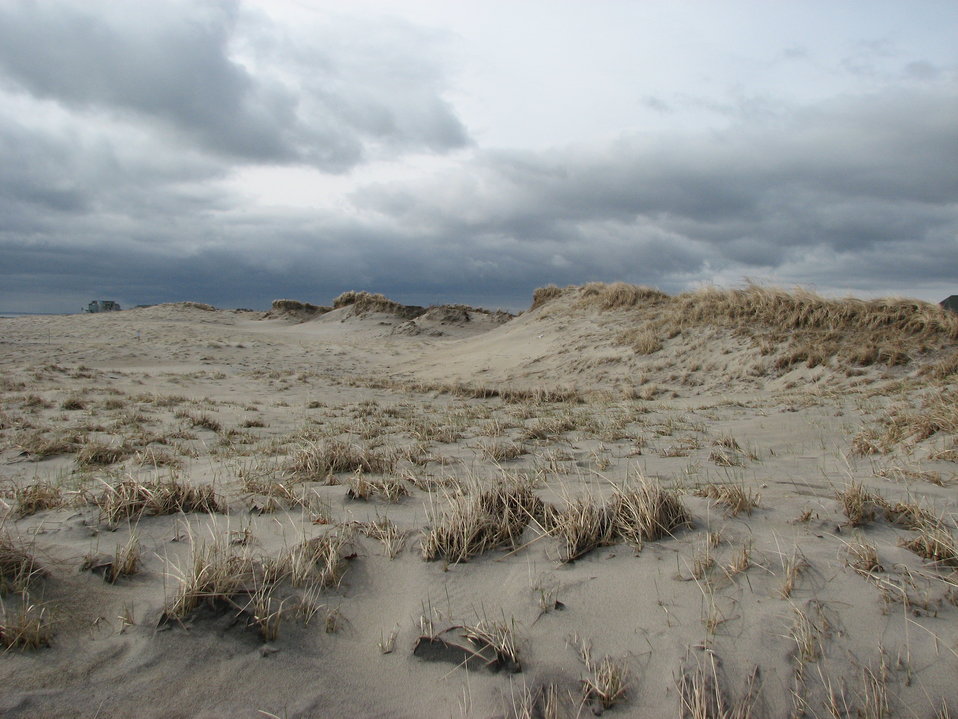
Photo of the Week - Hampton Beach in New Hampshire

Photo of the Week - 11/12/10

Piping plover habitat at Hampton Beach in New Hampshire.